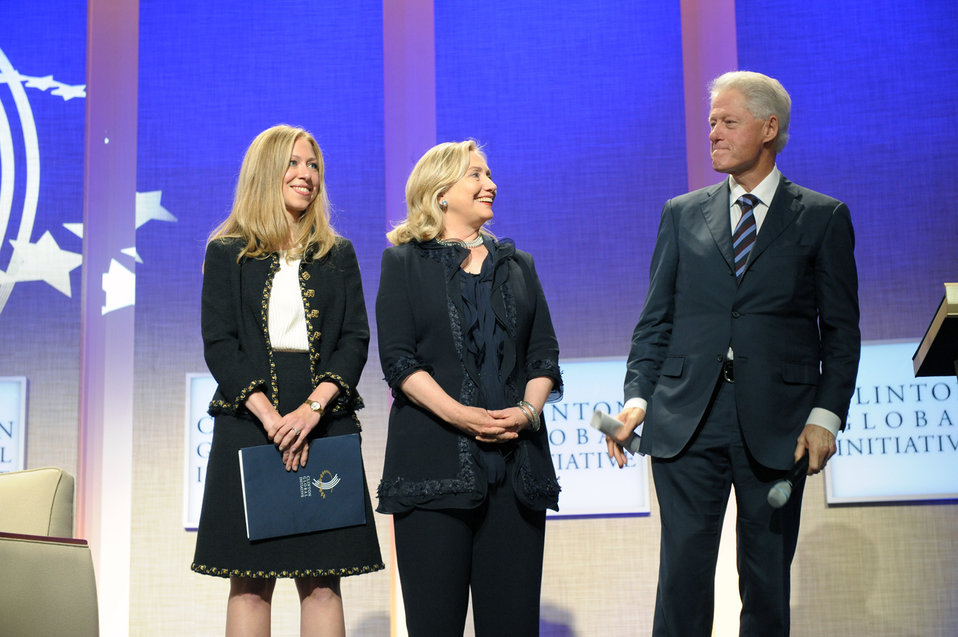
Secretary Clinton and Chelsea Clinton Participate in the Clinton Global Initiative Annual Meeting

U.S. Secretary of State Hillary Rodham Clinton and Chelsea Clinton participate in the Clinton Global Initiative Annual Meeting and hold a one-on-one “conversation” during the Closing Plenary, at the Sheraton Midtown Hotel in New York, New York, on September 22, 2011.